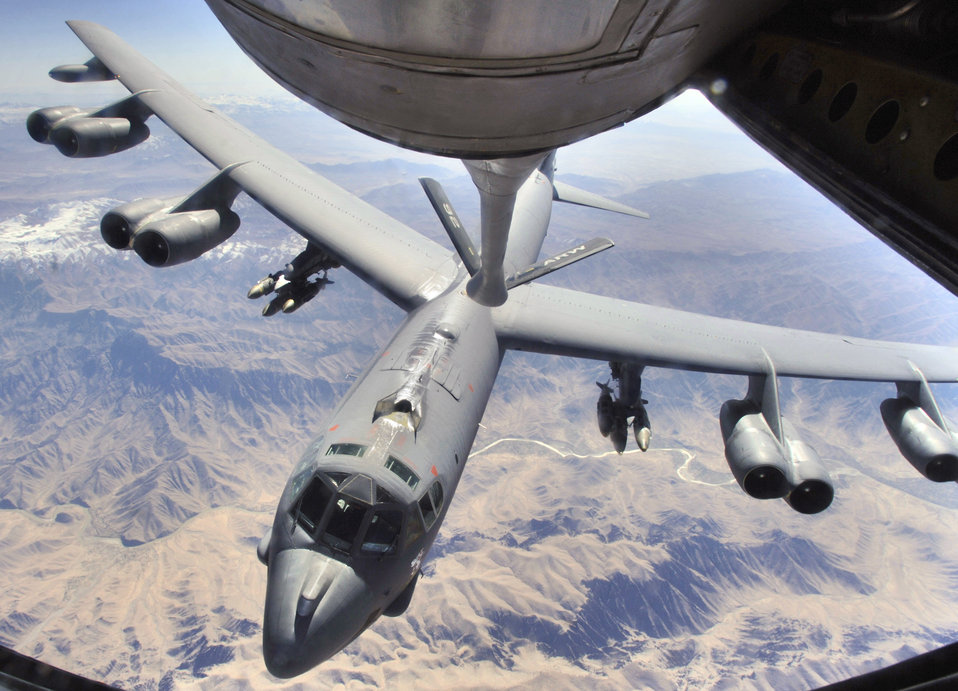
Air Force flexibility on display in Iraq and Afghanistan

Bombers, like this B-52 Stratofortress ready to refuel from a KC-135 Stratotanker over Afghanistan, provide coalition ground forces on-demand close air support. Bombing support is just one of the services Airmen provide their sister services and coalition partners in Afghanistan and Iraq. The bomber is from the 2nd Bomb Wing at Barksdale Air Force Base, La.